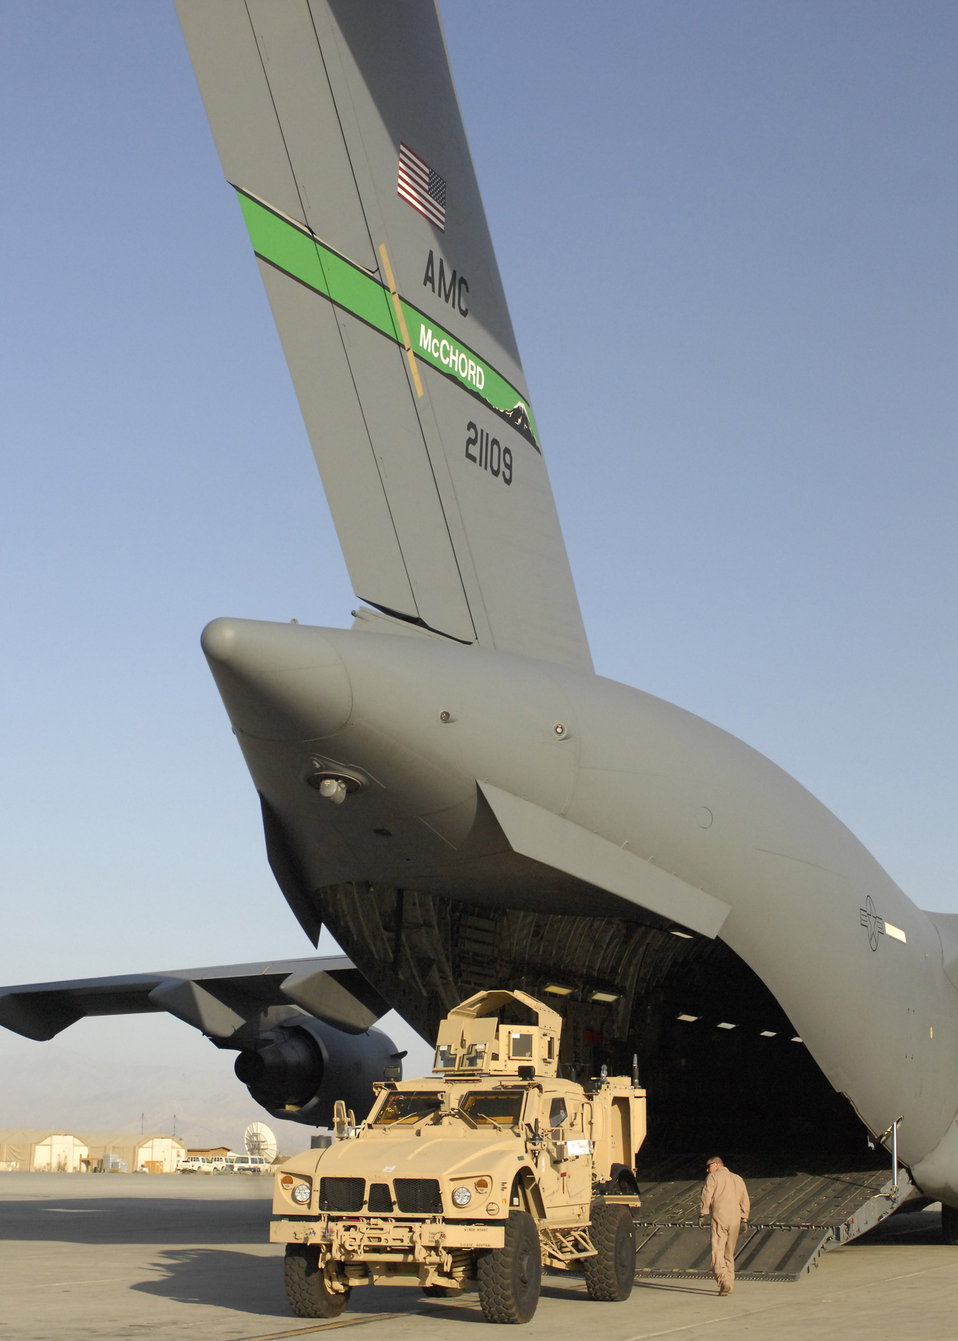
Mobility Airmen continue peak pace for Operation Enduring Freedom

A C-17 Globemaster III loadmaster inspects a mine-resistant, ambush-protected all-terrain vehicle Oct. 1, 2009, at Bagram Airfield, Afghanistan. Transporting a load of M-ATVs by Air Force aircraft can be accomplished in a day, where sealift would require approximately 26 days. An order for more than 6,600 of the M-ATVs are expected to be fielded over the next year. Three M-ATVs were loaded onto a C-17 Globemaster III and four onto a C-5 Galaxy at Air Mobility Command's Charleston Air Force Base, S.C., on Sept. 29 and flown to Afghanistan. The M-ATV is designed to replace the up-armored Humvees in Afghanistan. The M-ATV will carry up to five personnel: four plus a gunner. The C-17 is from McChord Air Force Base, Wash. and was operated by a crew from Charleston AFB, S.C.